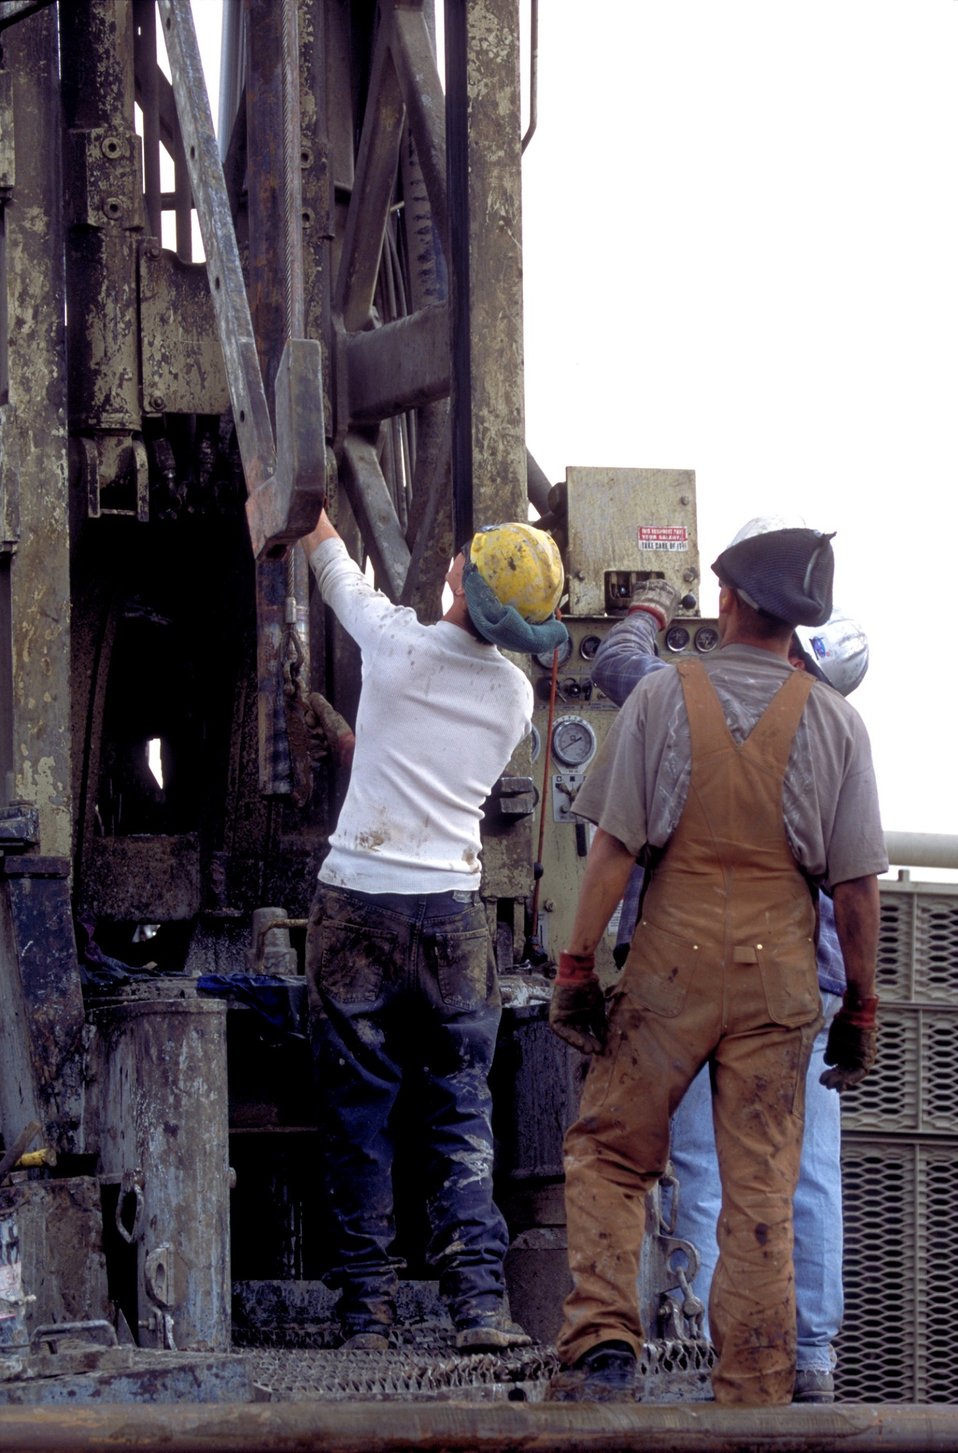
Drilling for coal bed methane near Price, Utah.